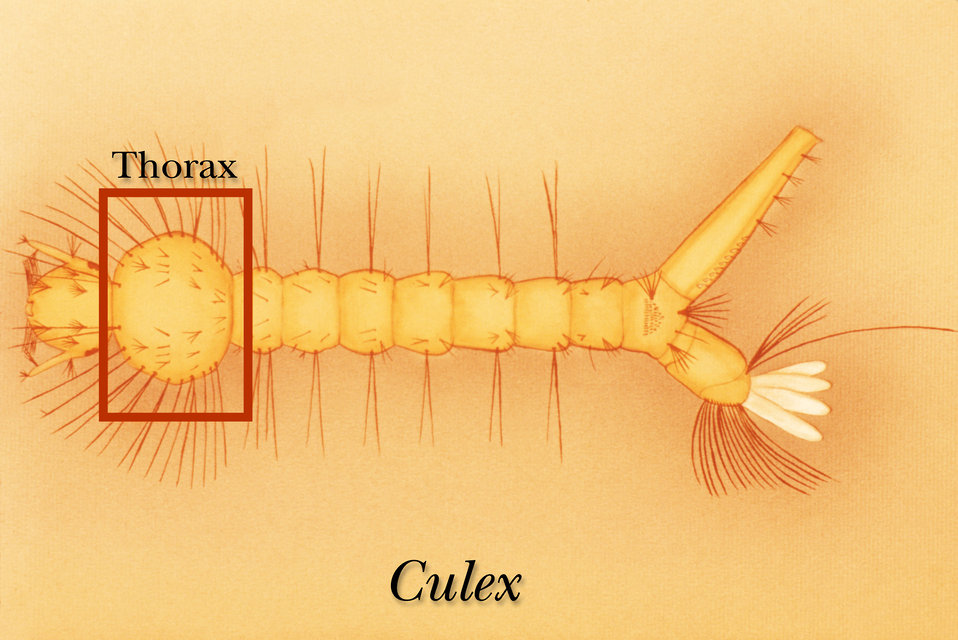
Illustration identifying the thoracic region of a Culex mosquito larva.